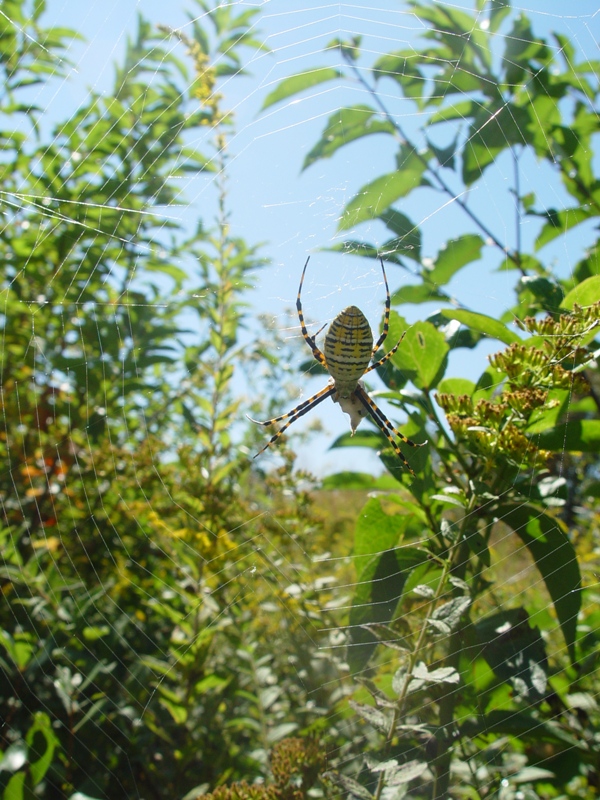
Photo of the Week - Spider at John H. Chafee National Wildlife Refuge, RI

Photo of the Week - 09/28/10

Spider at John H. Chafee National Wildlife Refuge in Rhode Island.